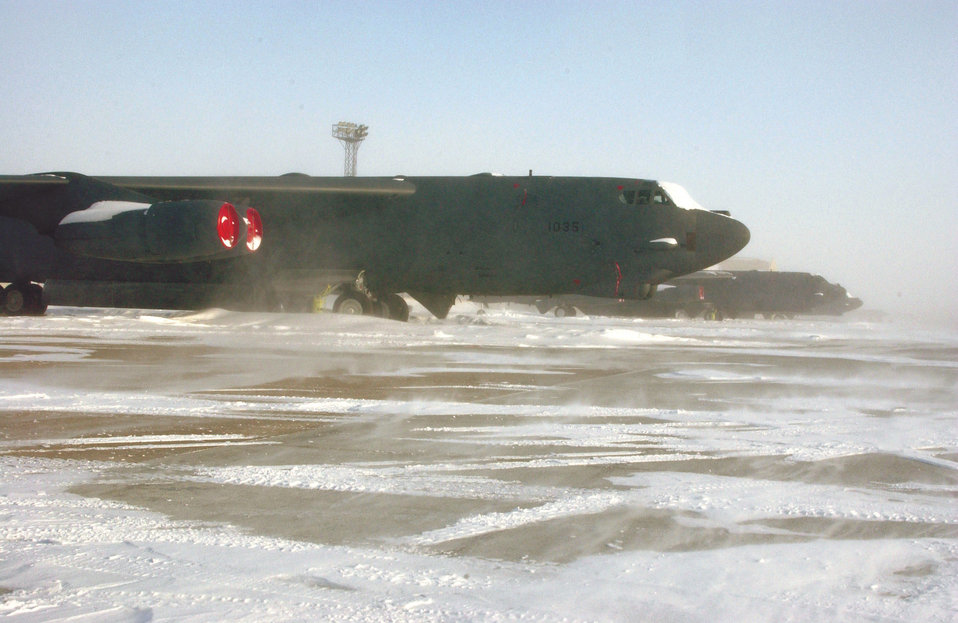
Cold-weather mission

MINOT AIR FORCE BASE, N.D. -- B-52H Stratofortress aircraft sit in snowy conditions on the flightline here Jan. 27. The base received about 12 inches of snow and had weather conditions of minus 45 degrees with wind gusts of 27-plus mph.